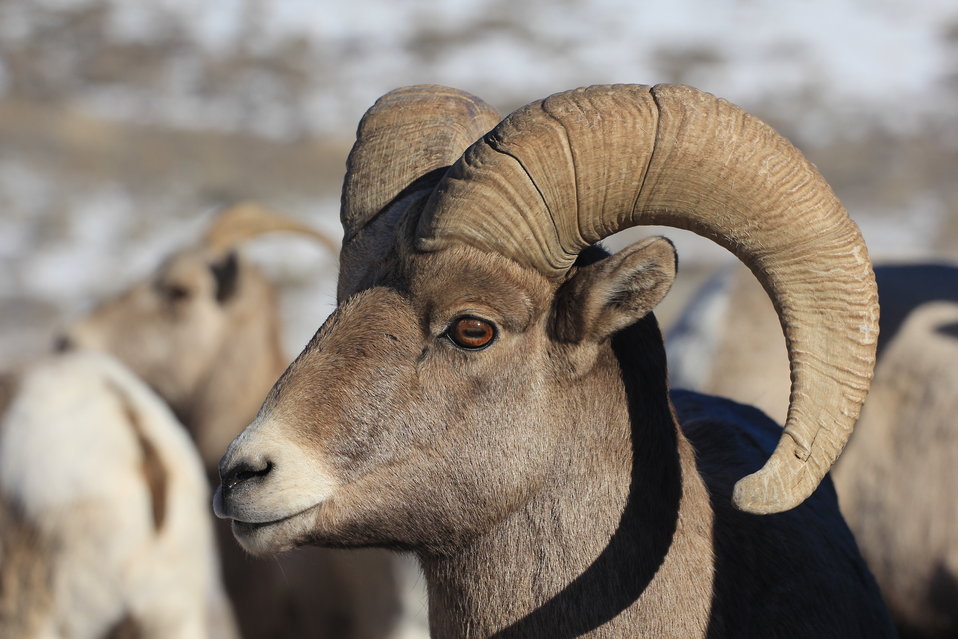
Curved Shadow

A curved shadow results from sunlight on a bighorn sheep's horn. Rams are famous for their large, curled headgear.

Credit: USFWS / Ann Hough, National Elk Refuge volunteer